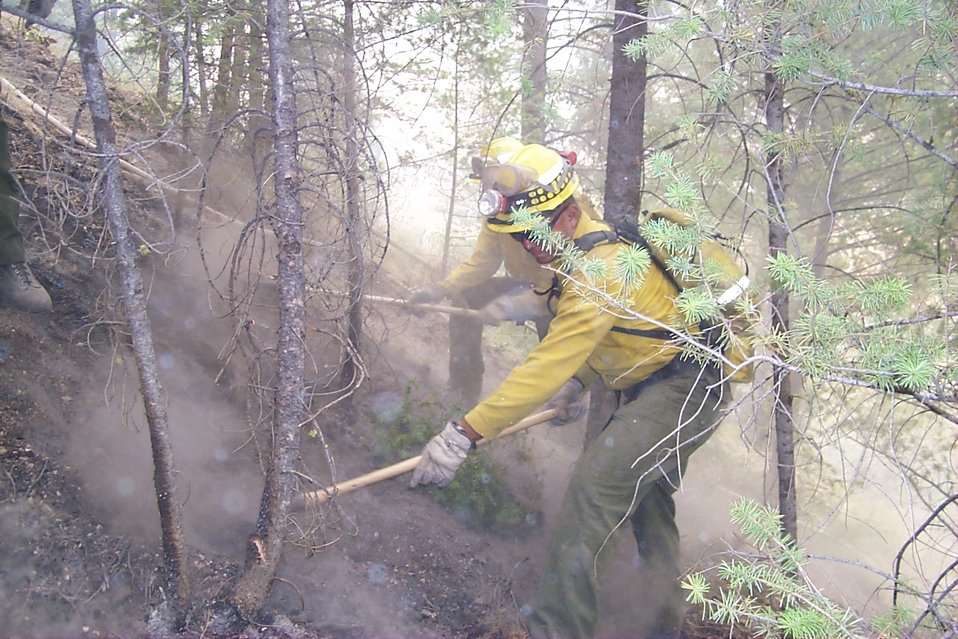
Line crew Fire Clearwater Fire Salmon Field Office USRD Upper Snake River District